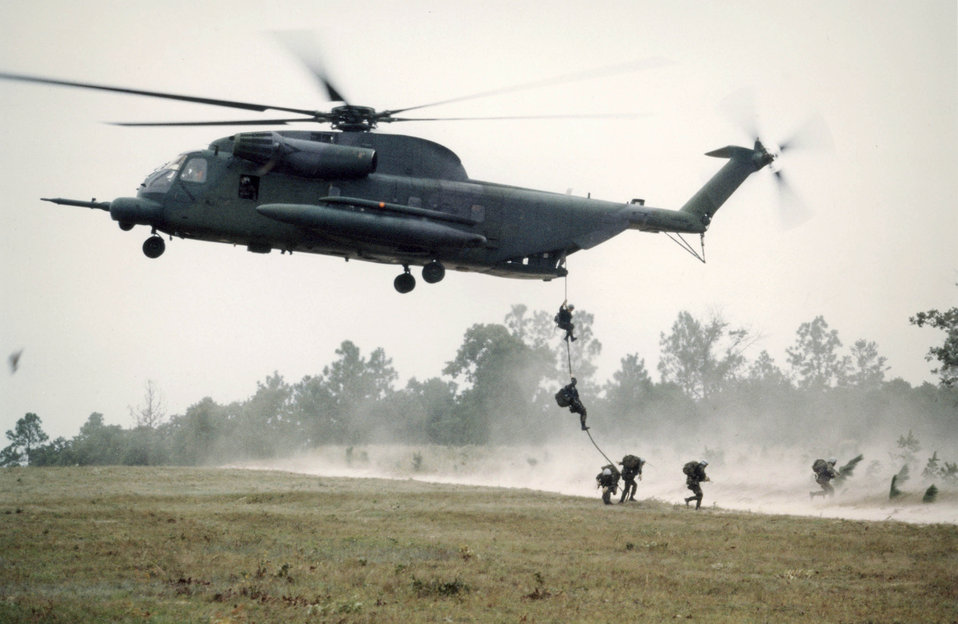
MH-53 Pave Low helicopter

1960's -- MH-53 Pave Low helicopter, and Special Operations, 20 S.O.S. The Pave Low's mission is low-level, long-range, undetected penetration into denied areas, day or night, in adverse weather, for infiltration, exfiltration and resupply of special operations forces.